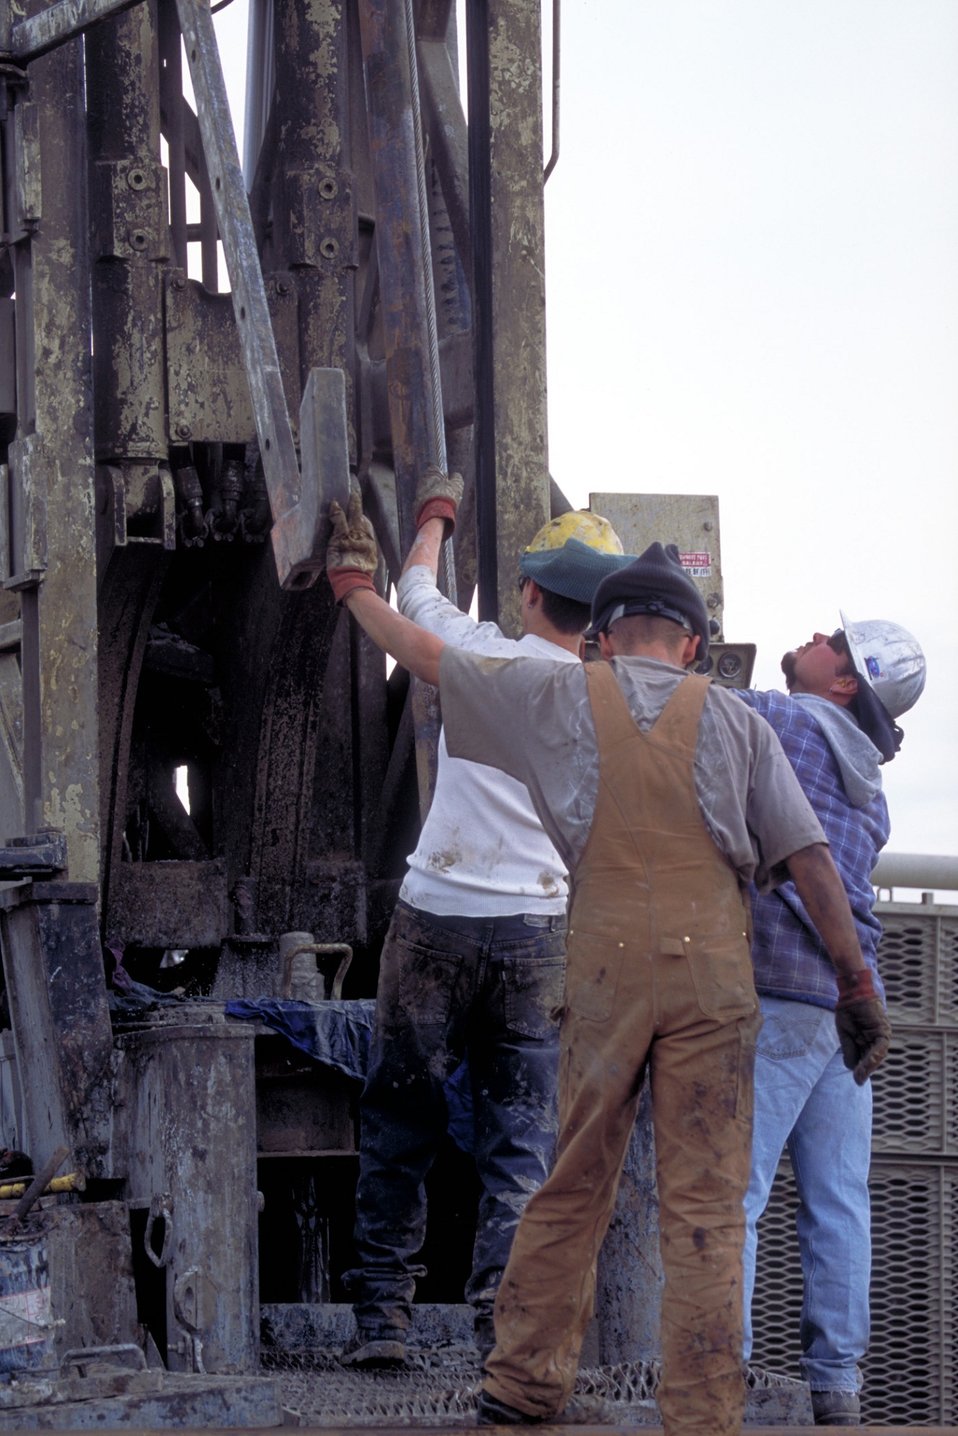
Drilling for coal bed methane near Price, Utah.